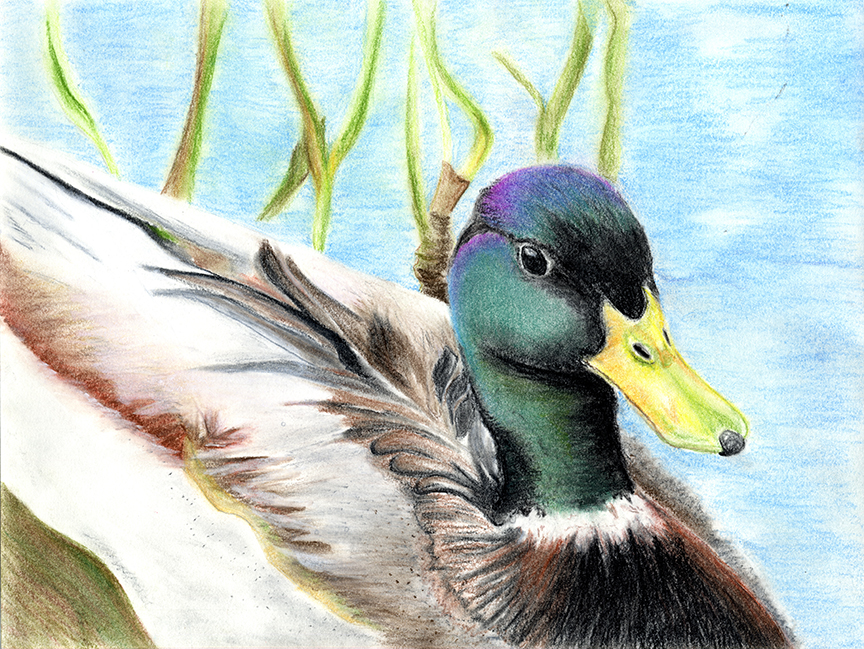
JRDuck2013NV

2013 Junior Duck Stamp Best of Show-Nevada